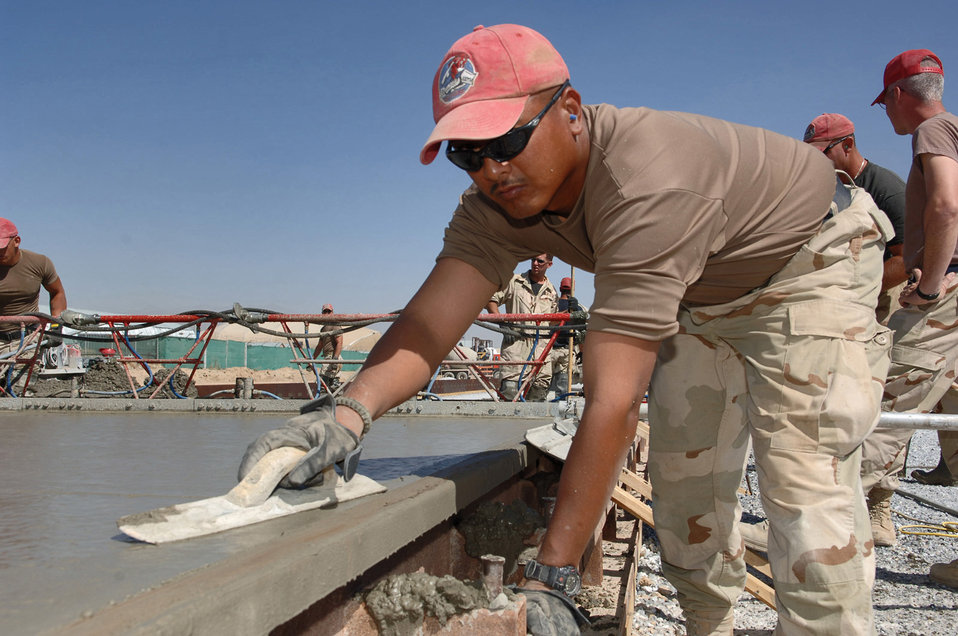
Operation Enduring Freedom

BAGRAM AIR BASE, Afghanistan -- Tech. Sgt. John Narvarte smoothes freshly poured concrete for the newest section of aircraft parking ramp here. The 1st Expeditionary Red Horse Group from Nellis Air Force Base, Nev., is adding an additional 60,000 square meters of aircraft ramp space as part of a $4.4-million airfield upgrade project. Sergeant Narvarte is a pavement and construction equipment craftsman with the 1st ERHG.